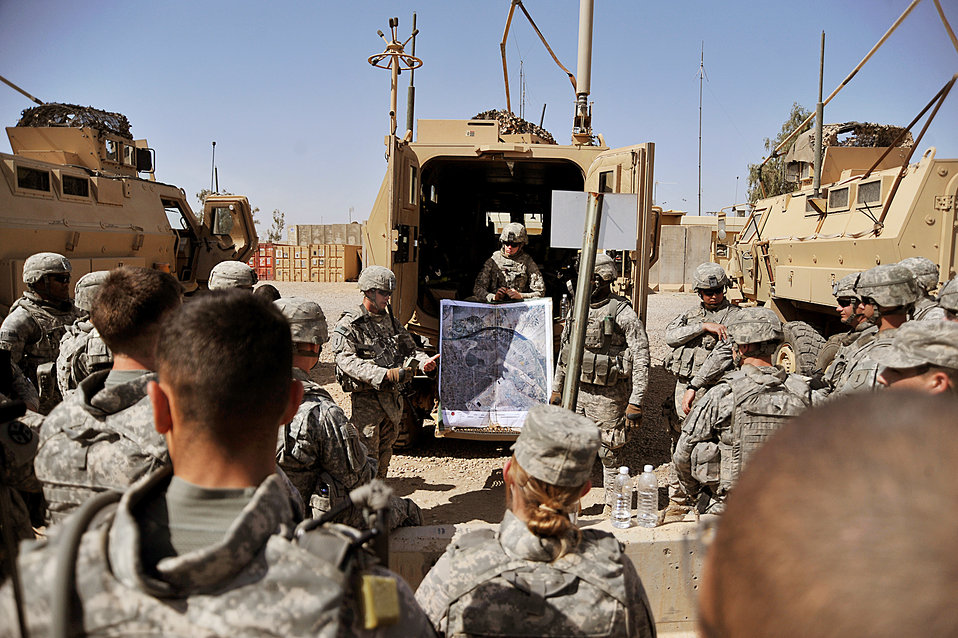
Airmen, Soldiers perform patrol

Airmen and Soldiers brief before a patrol April 14, 2010, at Joint Base Balad, Iraq. The patrol is a joint effort between Army and Air Force members looking for a weapons cache.